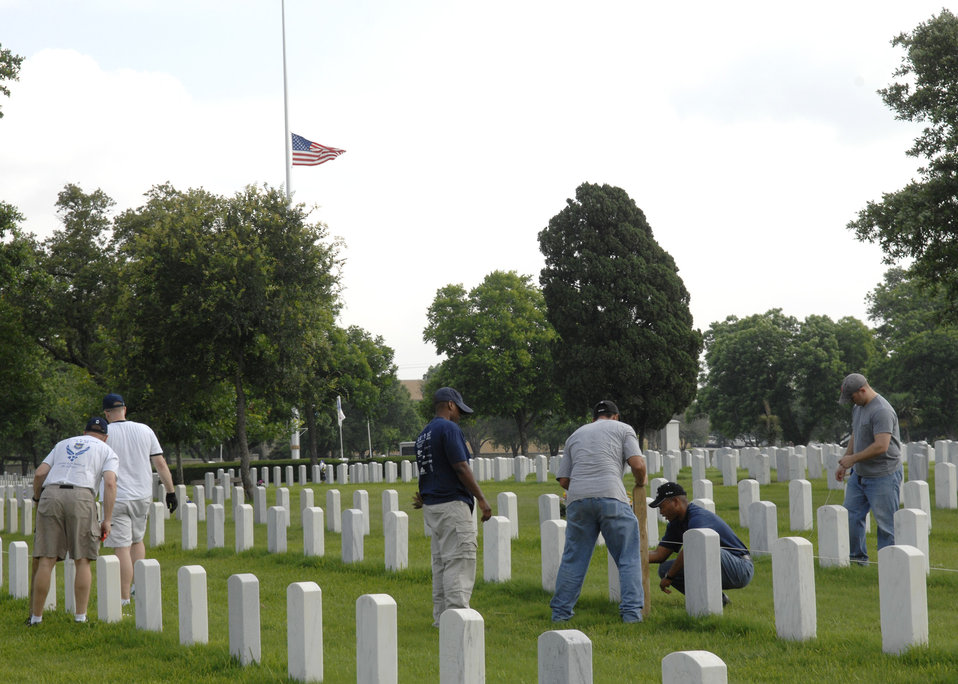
Serving those who served

Airmen volunteers straighten headstones May 15 at the Fort Sam Houston National Cemetery in San Antonio. This process aligns and straightens all the headstones and prepares the cemetery for funerals and the upcoming Memorial Day weekend. Airmen assigned to the Air Force News Agency in San Antonio spent the day adjusting the headstones.